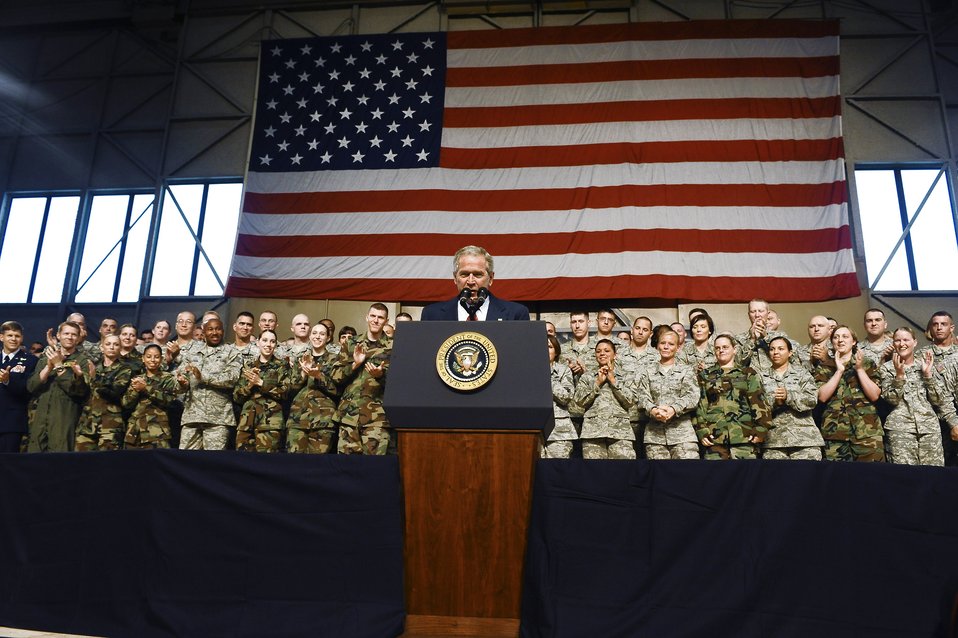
President visits Eielson

President George W. Bush gives a speech while many cheer Aug. 4 at Eielson Air Force Base, Alaska. The president made a short stop at Eielson AFB during his trip to the 2008 Olympic Games being held in Beijing.